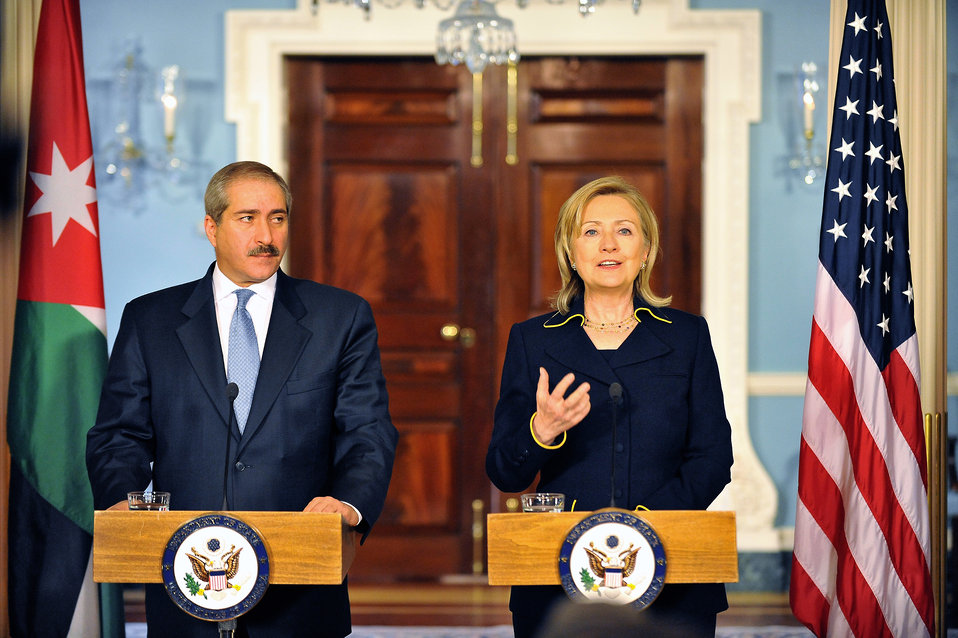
Secretary Clinton and Jordanian Foreign Minister Judeh Deliver Remarks

U.S. Secretary of State Hillary Rodham Clinton and Jordanian Foreign Minister Nasser Judeh deliver remarks in a joint press conference at the U.S. Department of State in Washington, D.C., on January 26, 2011.